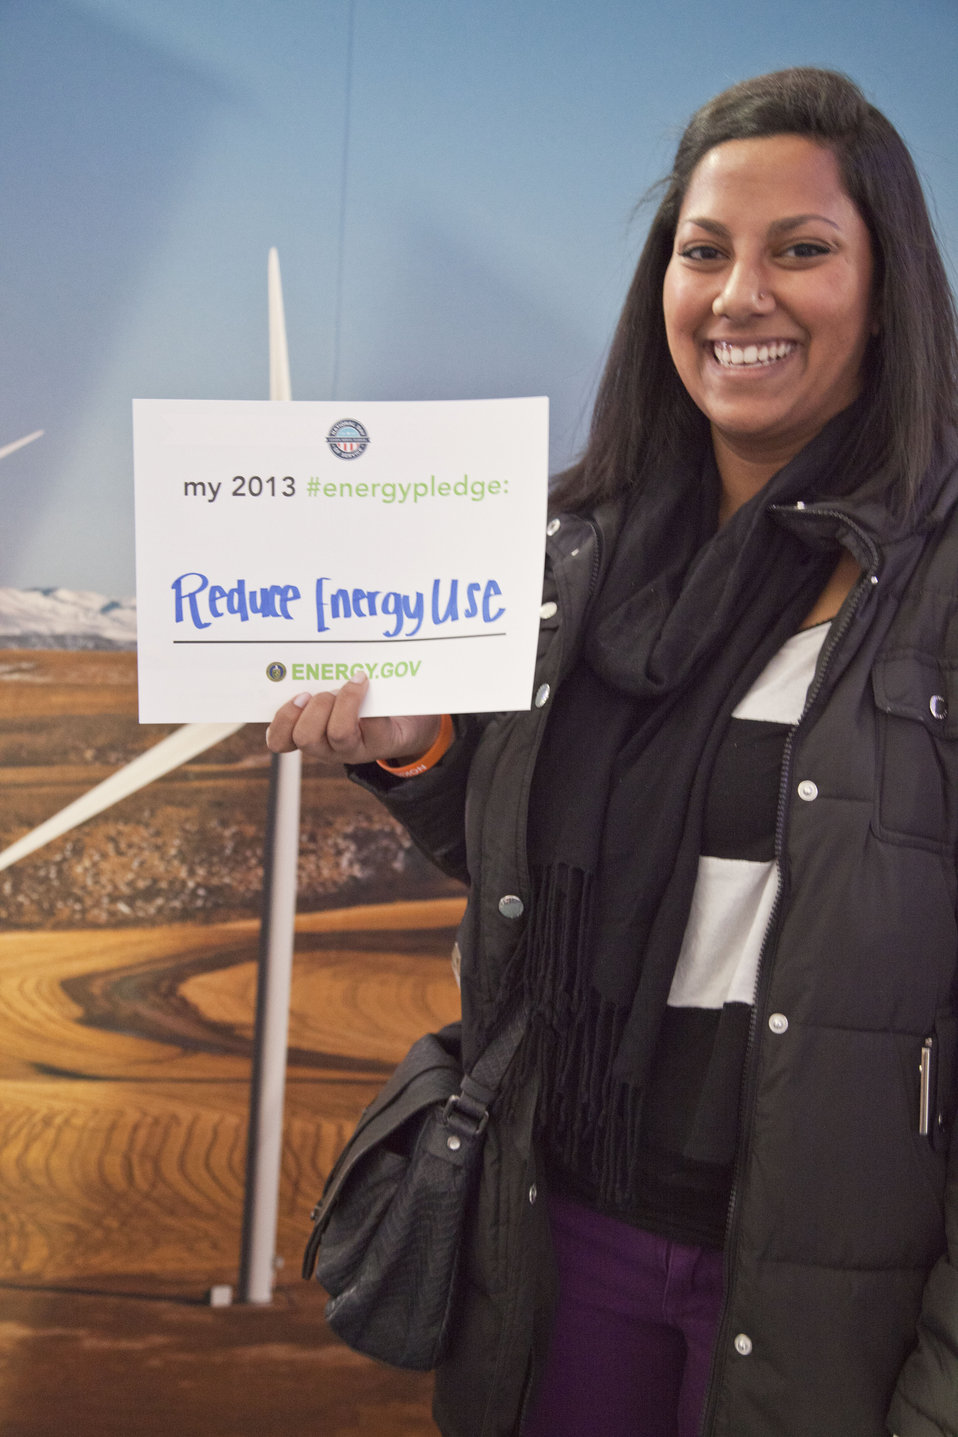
What's your #energypledge?